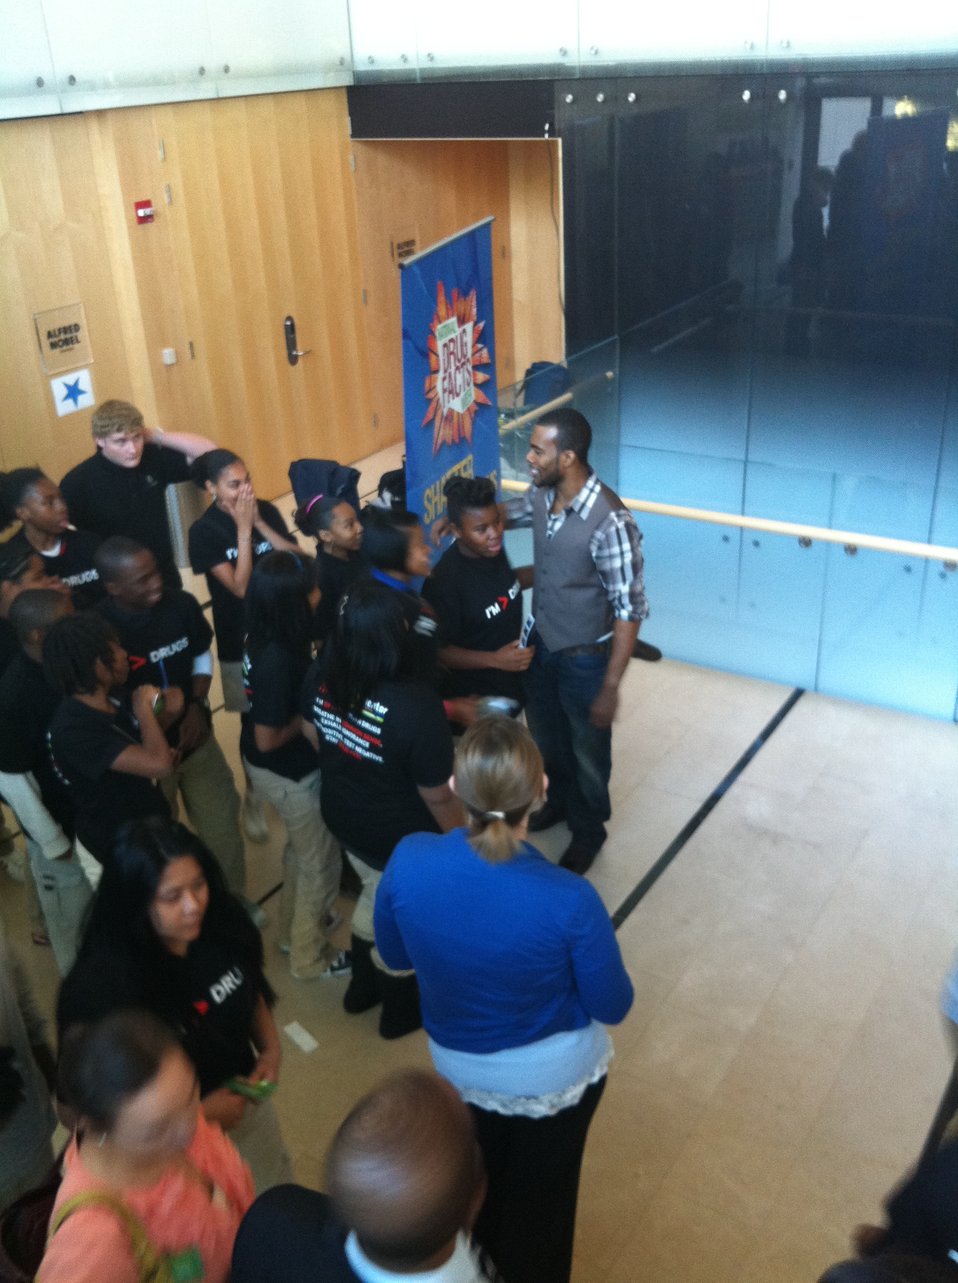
Mentor 14